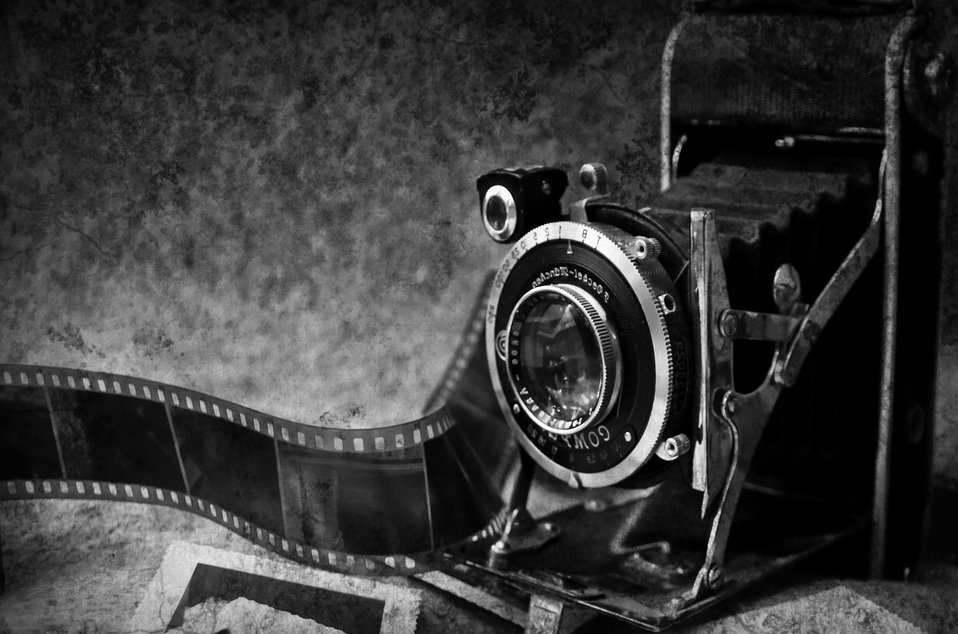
Old camera black and white.